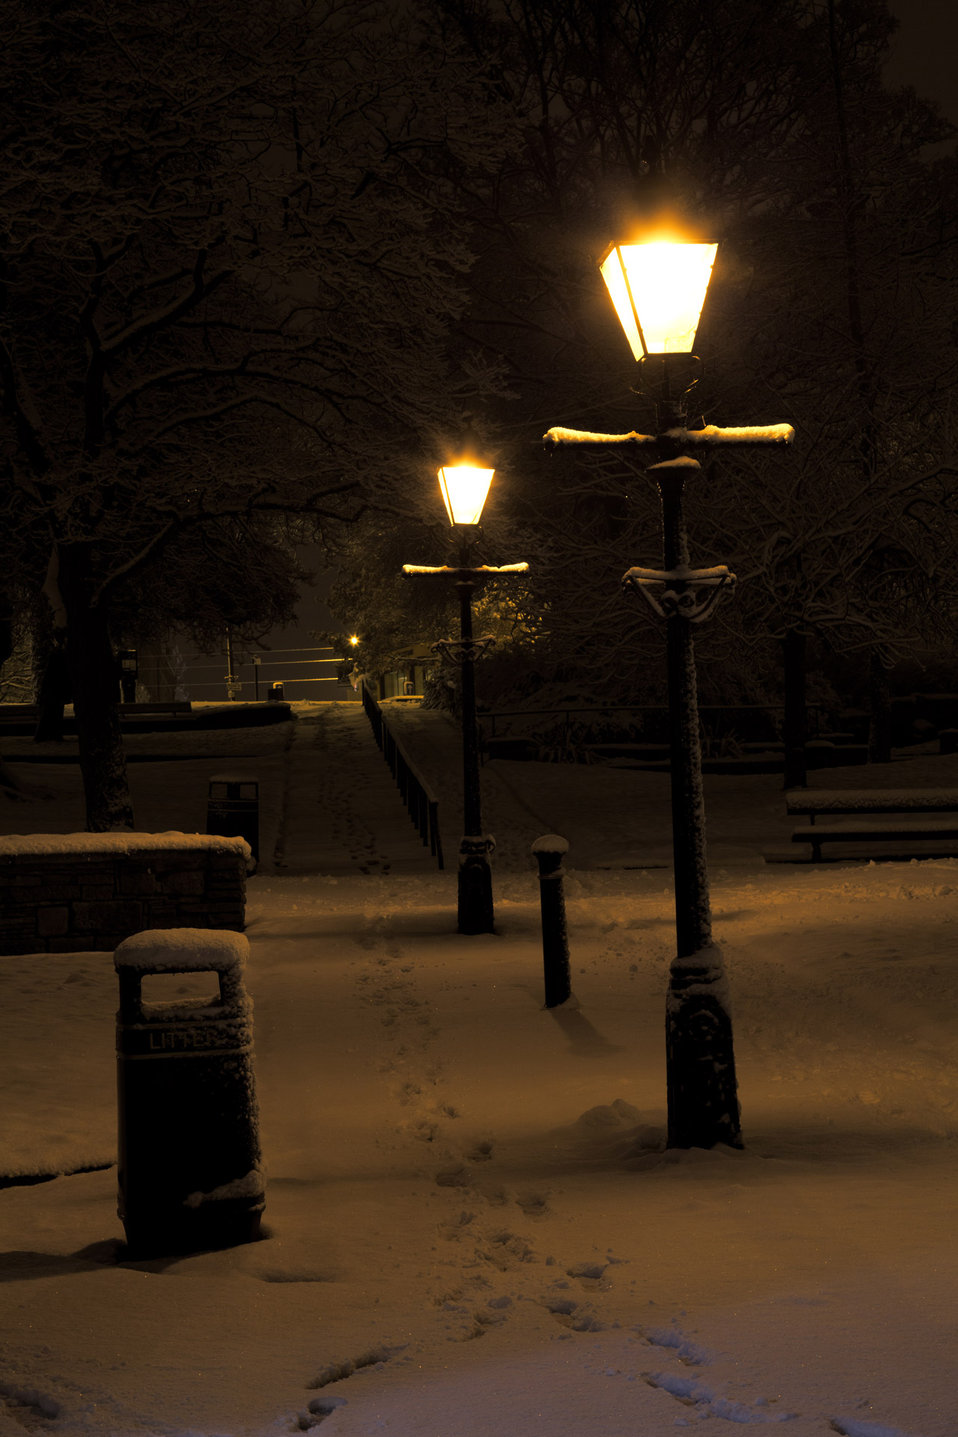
Park at night in winter

Lamps in a park at night in harrogate in winter.